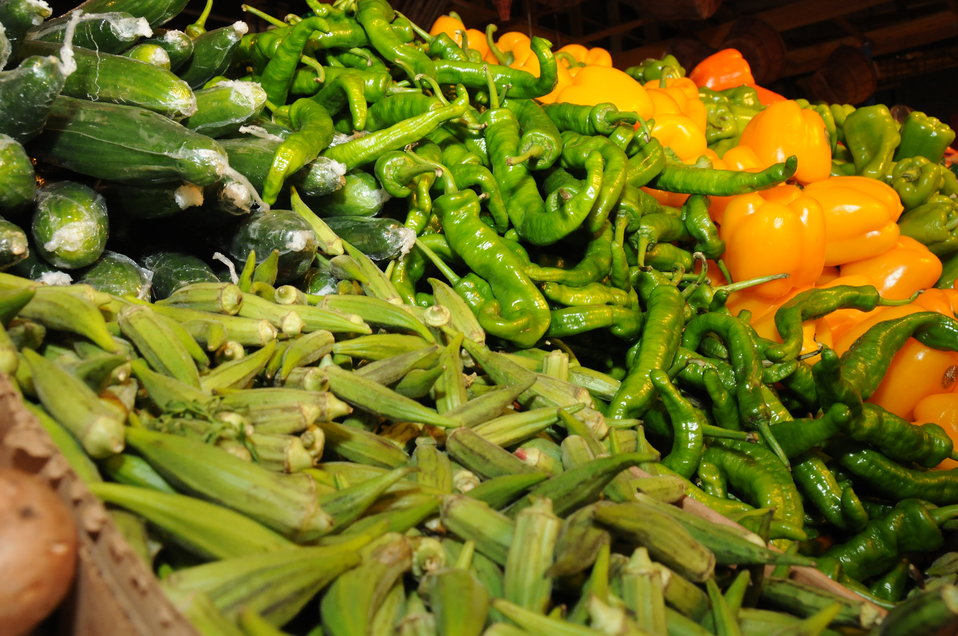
The Reading Terminal Market offers produce fresh from the field to the people of Philadelphia, PA on April 3, 2009. There are Amish specialties, fruits, vegetables, meats, seafood, and poultry. Reading Terminal Market opened for business in 1892 with approximately 78,000 square feet and almost 800 spaces for vendors. The Market was revitalized in the 1990’s and today is still the gastronomic bazaar that its original planners had envisioned. Many of the historic Market stands survived the reconstruction and are once again filled with local produce, fresh eggs, milk, meats, poultry, seafood, handmade crafts, jewelry, and clothing. The Market is home to more than 80 merchants, two of whom are descendants of the original stand holders from a century before.